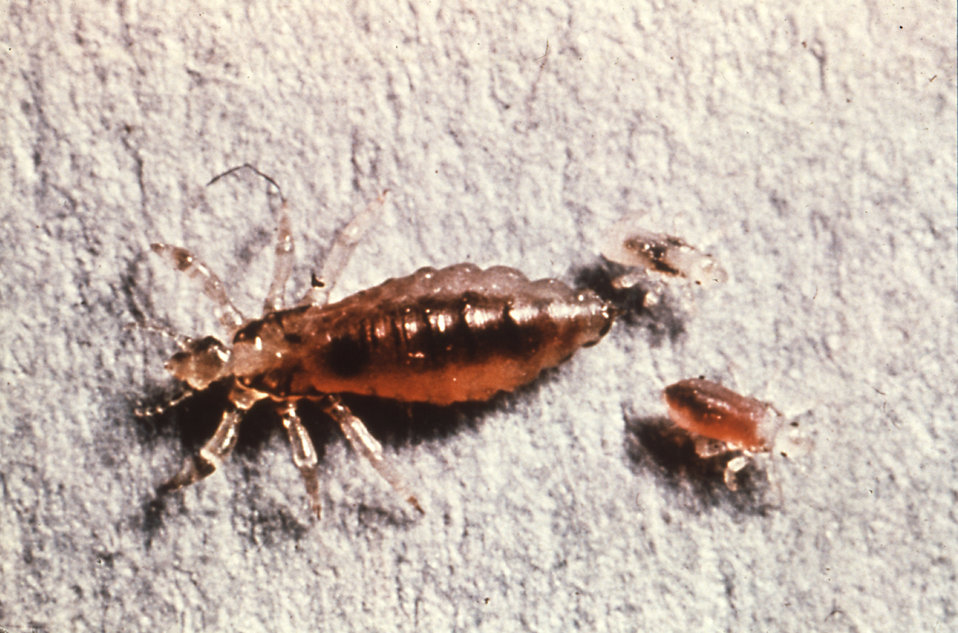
This image depicts an adult female body louse, Pediculus humanus, and two larval young.